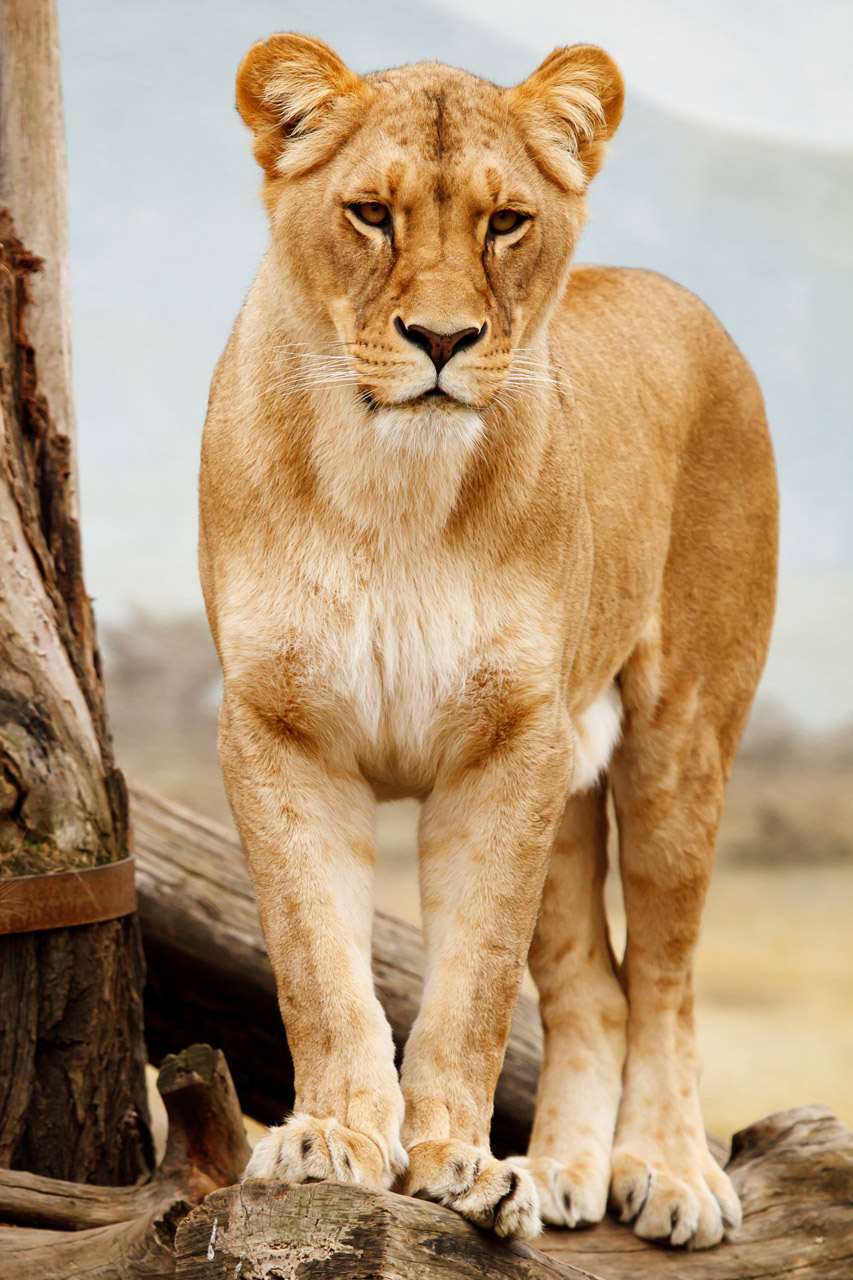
Portrait of lioness

Lioness standing on a log.